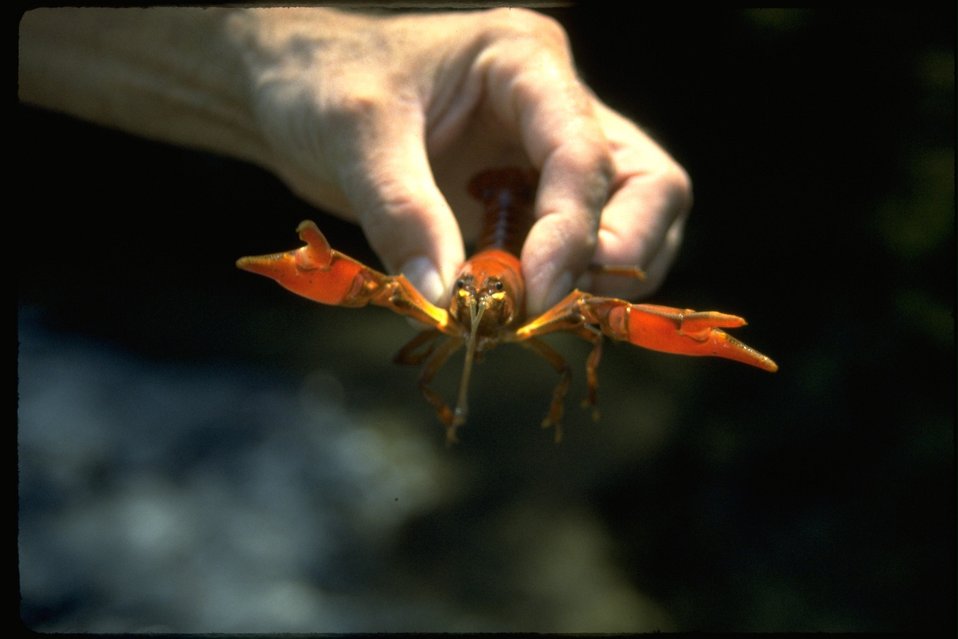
Macro shot of a crayfish.